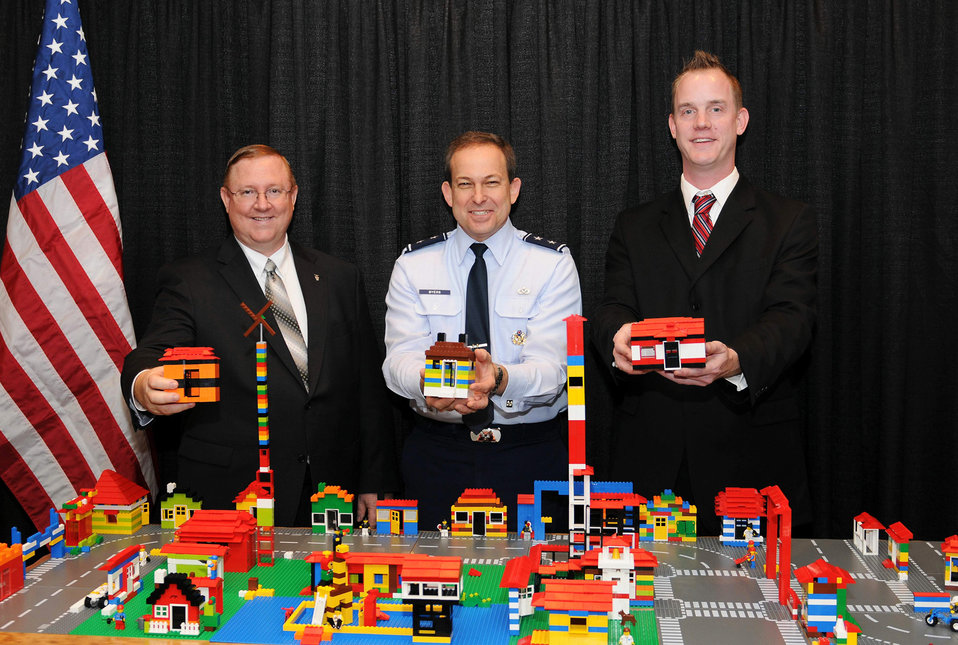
Housing seminar

Terry Edwards (left), Maj. Gen. Timothy A. Byers and Troy Peloquin show off some of the miniature houses built out of toy building blocks by attendees at the Professional Housing Management Association Professional Development Seminar in New Orleans. The building blocks, which were available at the Air Force's Housing trade-show booth to promote teamwork and customer service as building blocks for communities, were donated to the local school district to be enjoyed by local students. Mr. Edwards is the director of the Air Force Center for Engineering and Environment. General Byers is the Air Force civil engineer. Mr. Peloquin is the donations coordinator for the Louisiana Recovery School District.